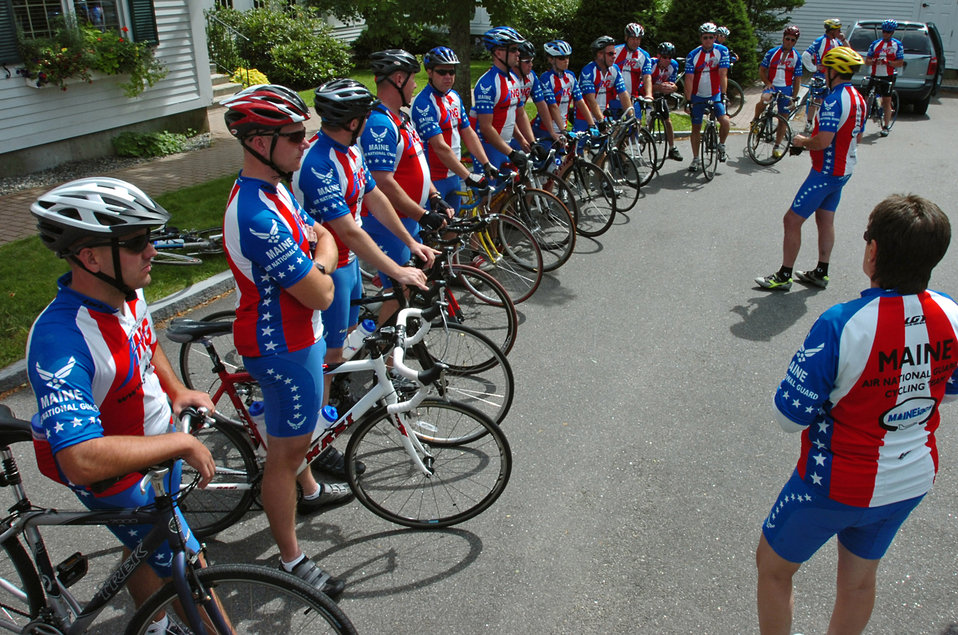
Maine Air Guard peddles Air Force Week from town to town

Lt. Col. Michael Girardin briefs Maine Air National Guard Cycle Team participants outside Freeport, Maine, about the final leg of their 170-mile, three-day bicycle ride from Bangor to Portland. The 18 Air Guard cyclists rode to promote Air Force Week New England that takes place Aug. 17 to 26. Team members had opportunities to speak with people along the route about the Air Guard during their trek.